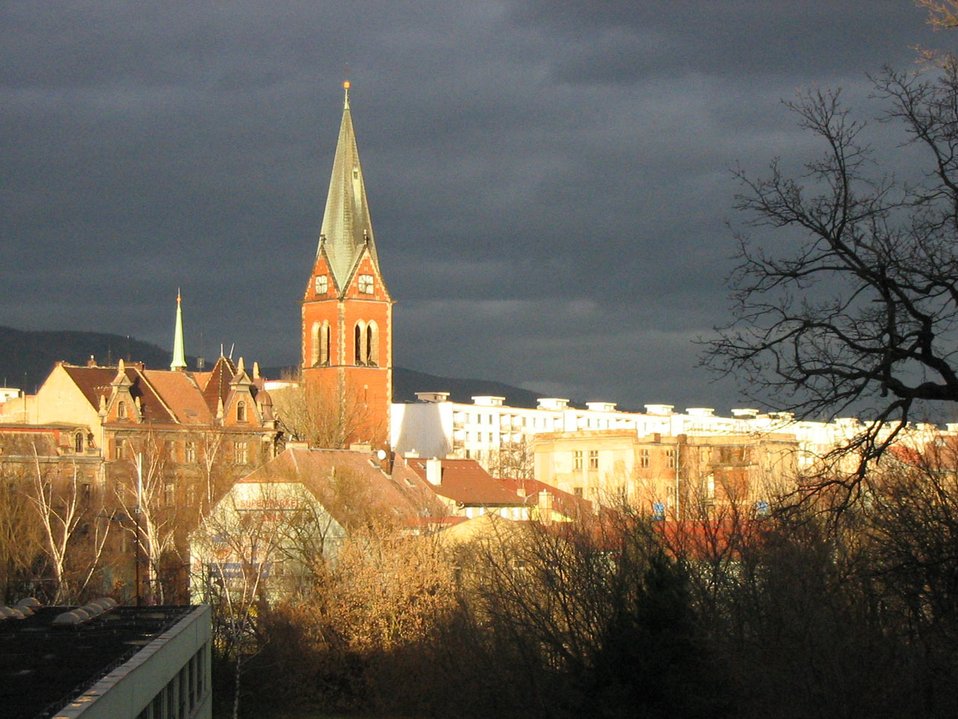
Red church in teplice

Red church in spa town teplice right before the storm.